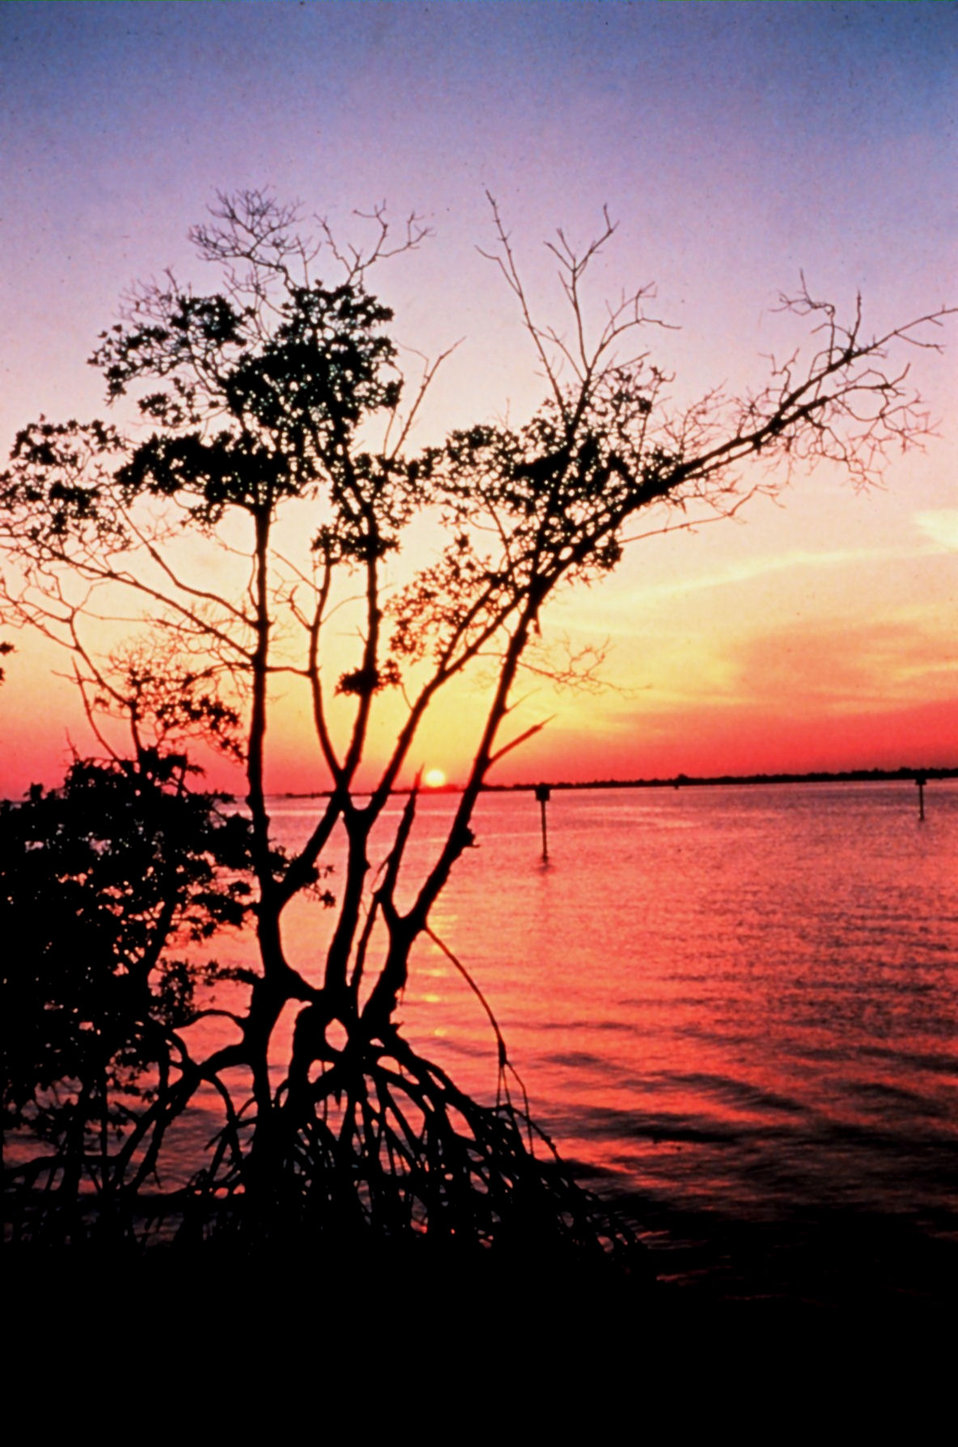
Mangrove sunset